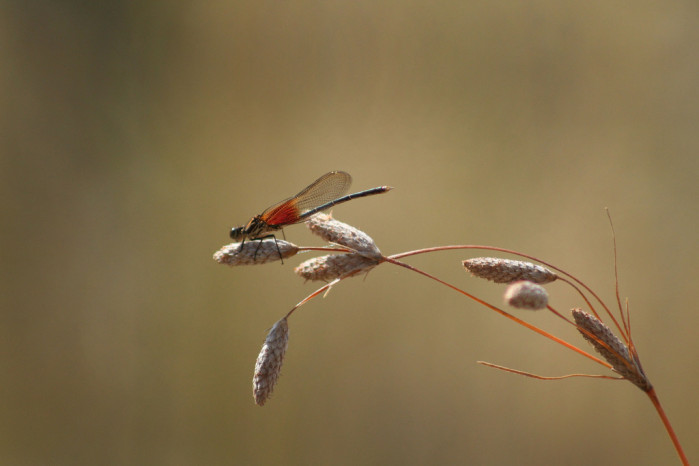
American rubyspot damselfly